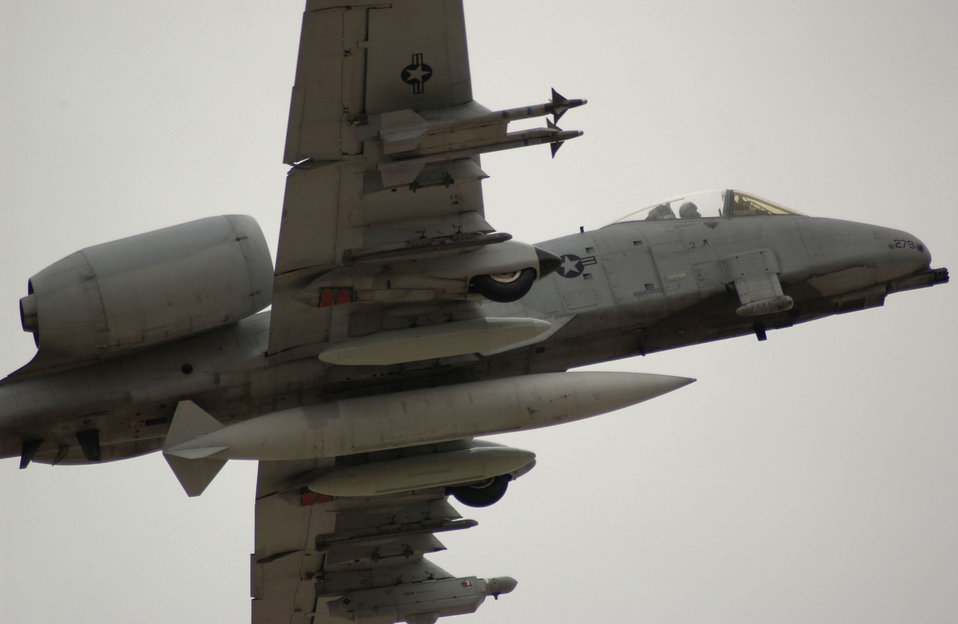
Taking an A-10 from pre-flight to flight

An A-10 Thunderbolt II takes off on a mission Oct. 29th from Davis-Monthan Air Force Base, Ariz.